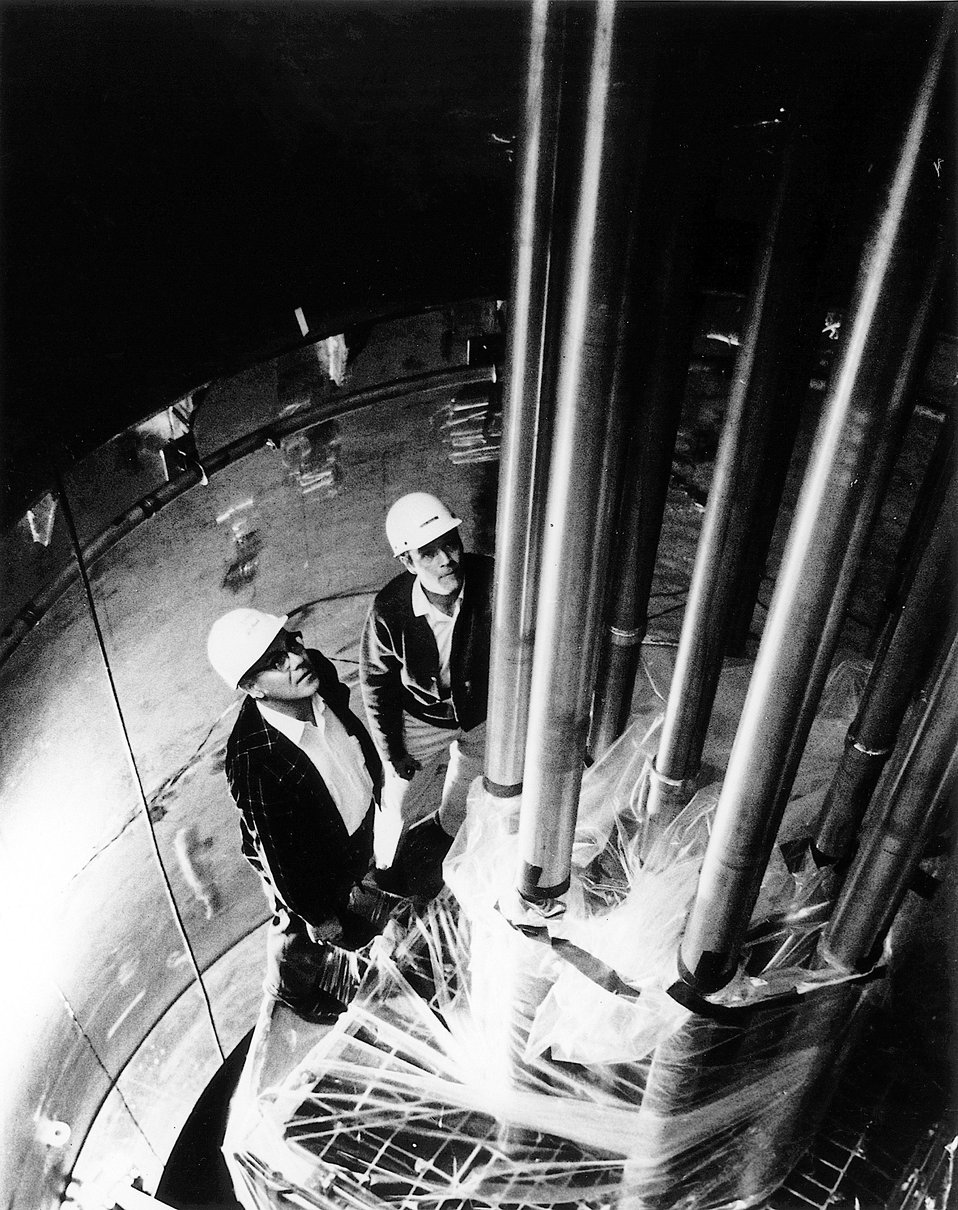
Nuclear Rigging... Engineers of the Idaho Nuclear Corporation examine the reactor core control structure of a Power Burst Facility at the National Reactor Testing Station of the Atomic Energy Commission in Idaho Falls, Idaho. Circa 1971.